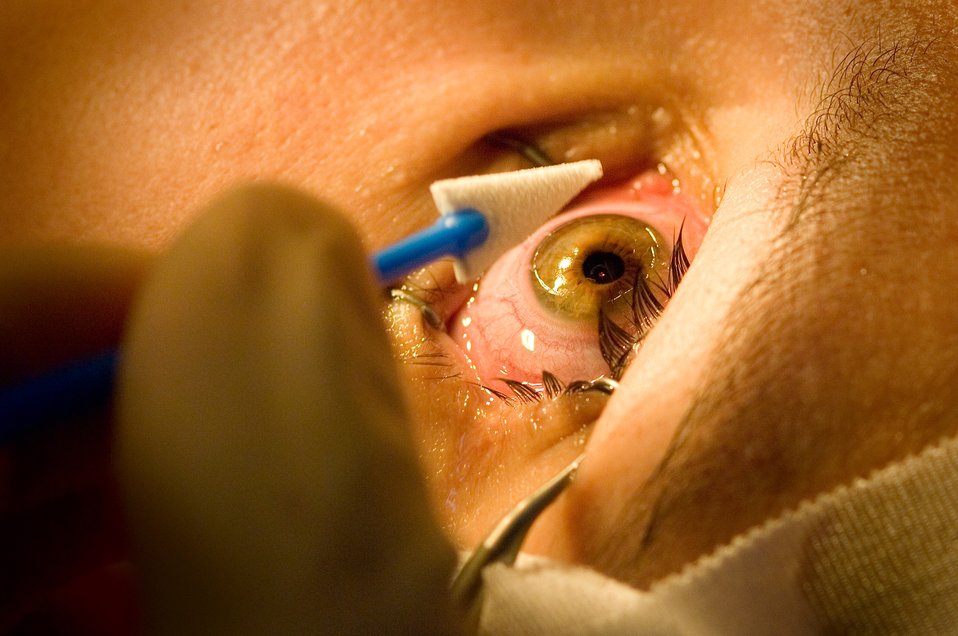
Better looking every day

Lt. Col. Charles Reilly performs Epi-LASIK surgery on Capt. Ruth Brenner Dec. 19 at the Wilford Hall Refractive Surgery Center at Lackland Air Force Base, Texas. The center has openings most every day for surgery and has some of the most advanced equipment in the world for performing refractive surgeries.